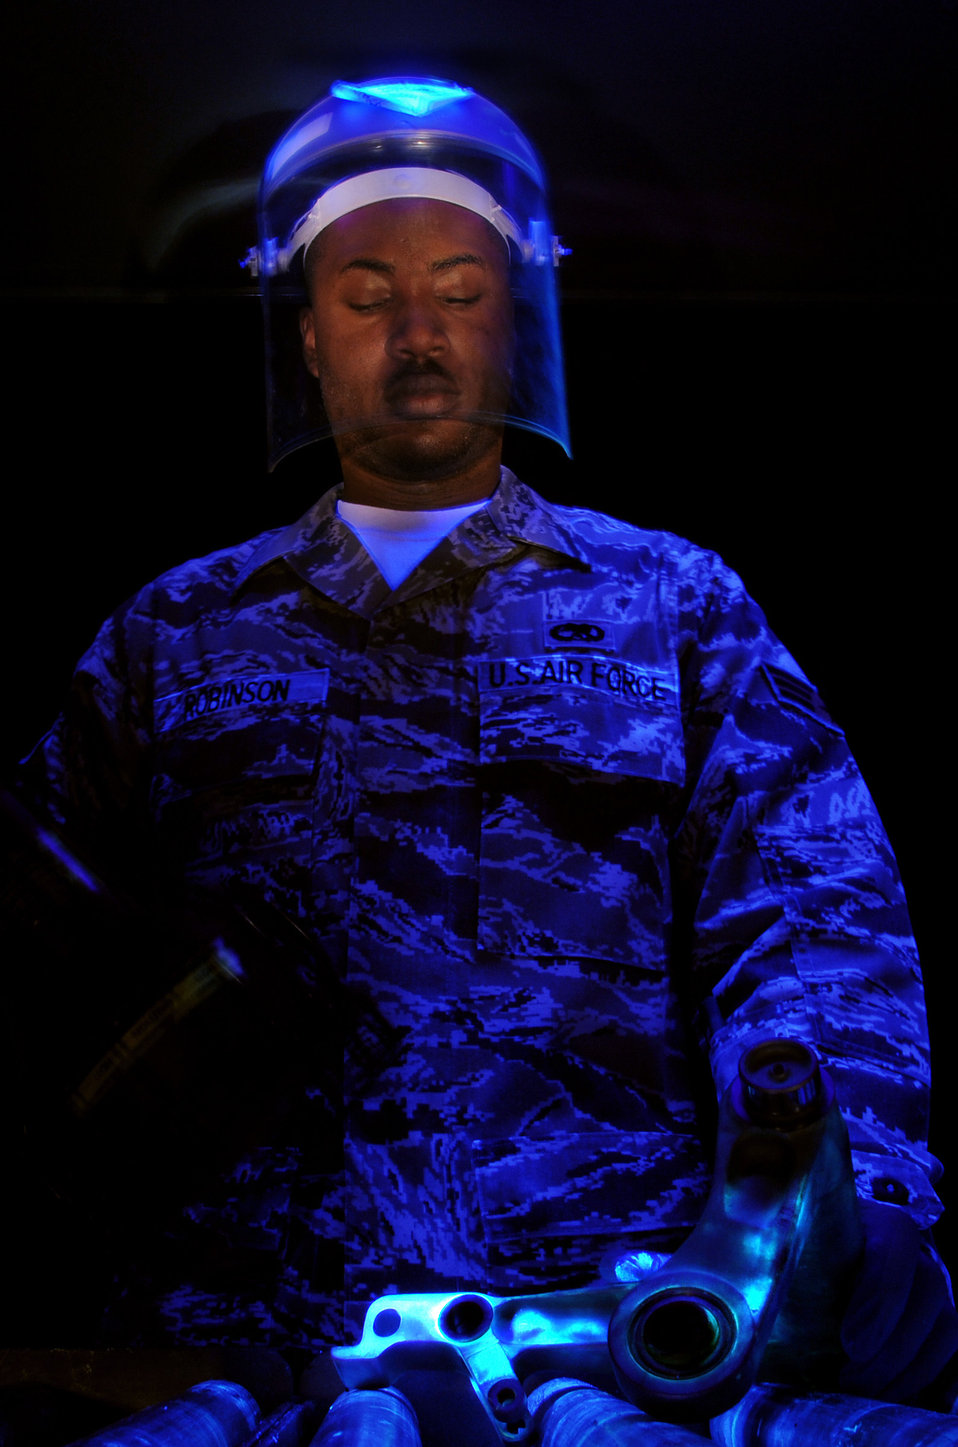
Airmen destroy nothing to sustain mission

Senior Airman Joshua Robinson inspects a component for cracks after its been dipped in fluorescent chemicals, which light up under black light July 17 at Royal Air Force Lakenheath, England. The process has been designed to allow Airman Robinson to find cracks and other defects in the various components he inspects, without damaging them. Airman Robinson is a 48th Equipment Maintenance Squadron nondestruction inspection journeyman.